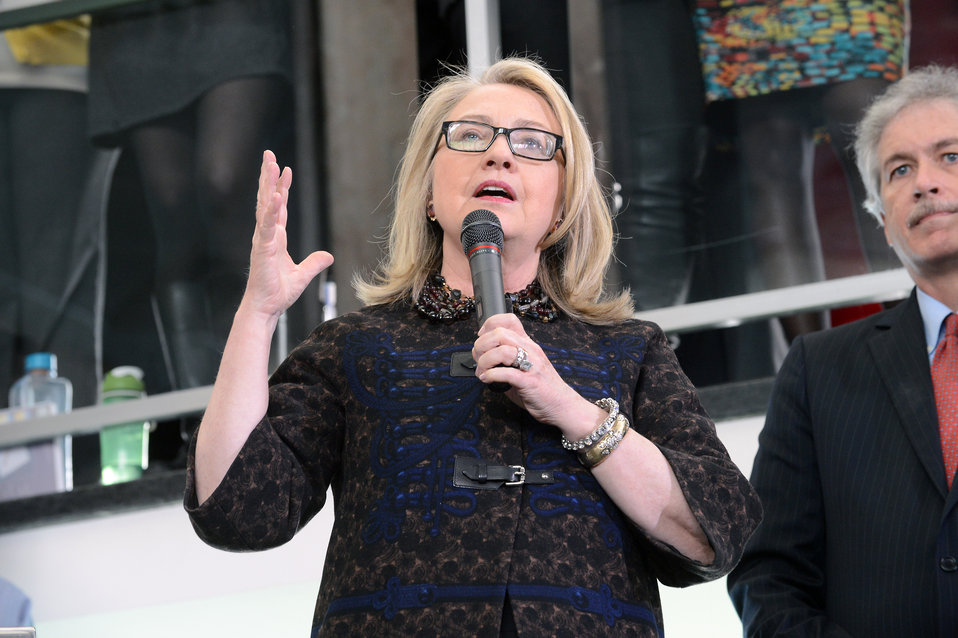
Secretary Clinton Says Farewell

U.S. Secretary of State Hillary Rodham Clinton says farewell to State Department employees at the U.S. Department of State in Washington, D.C., on February 1, 2013.